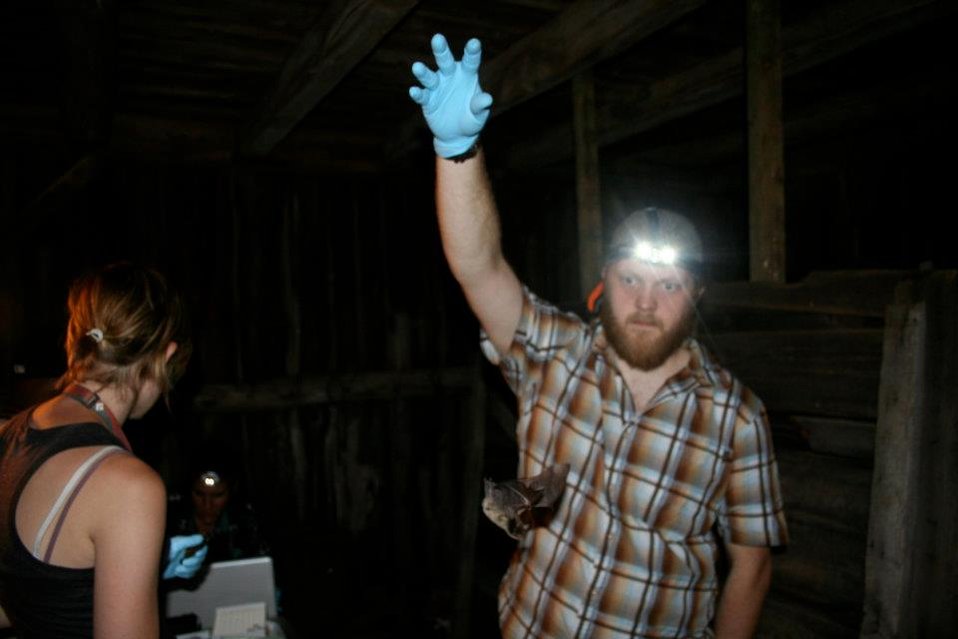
BU researcher Nate Fuller releases bat